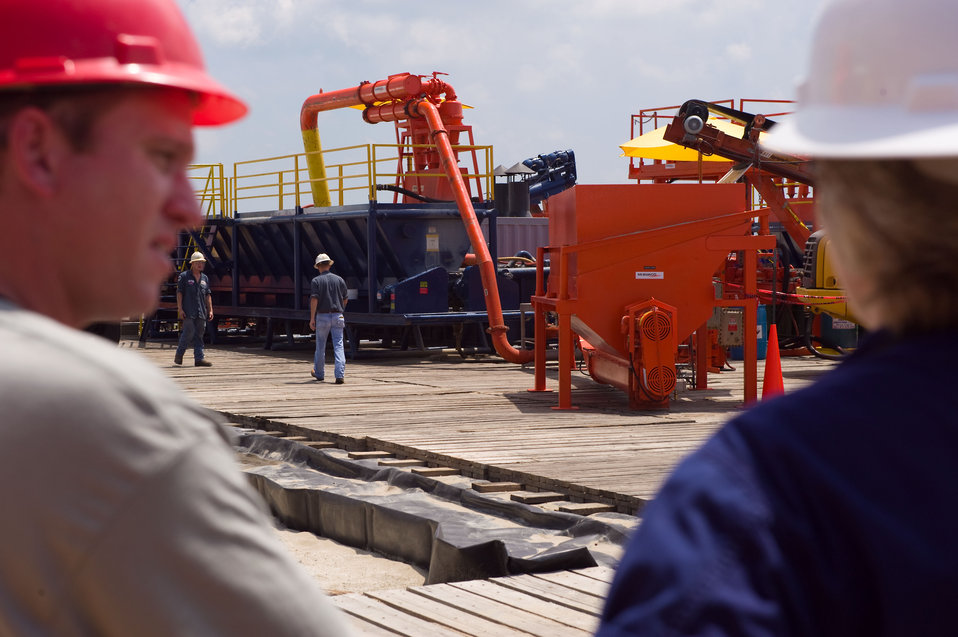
August 7, Observing the sand washing equipment

Sand washing equipment on Grand Isle, La.